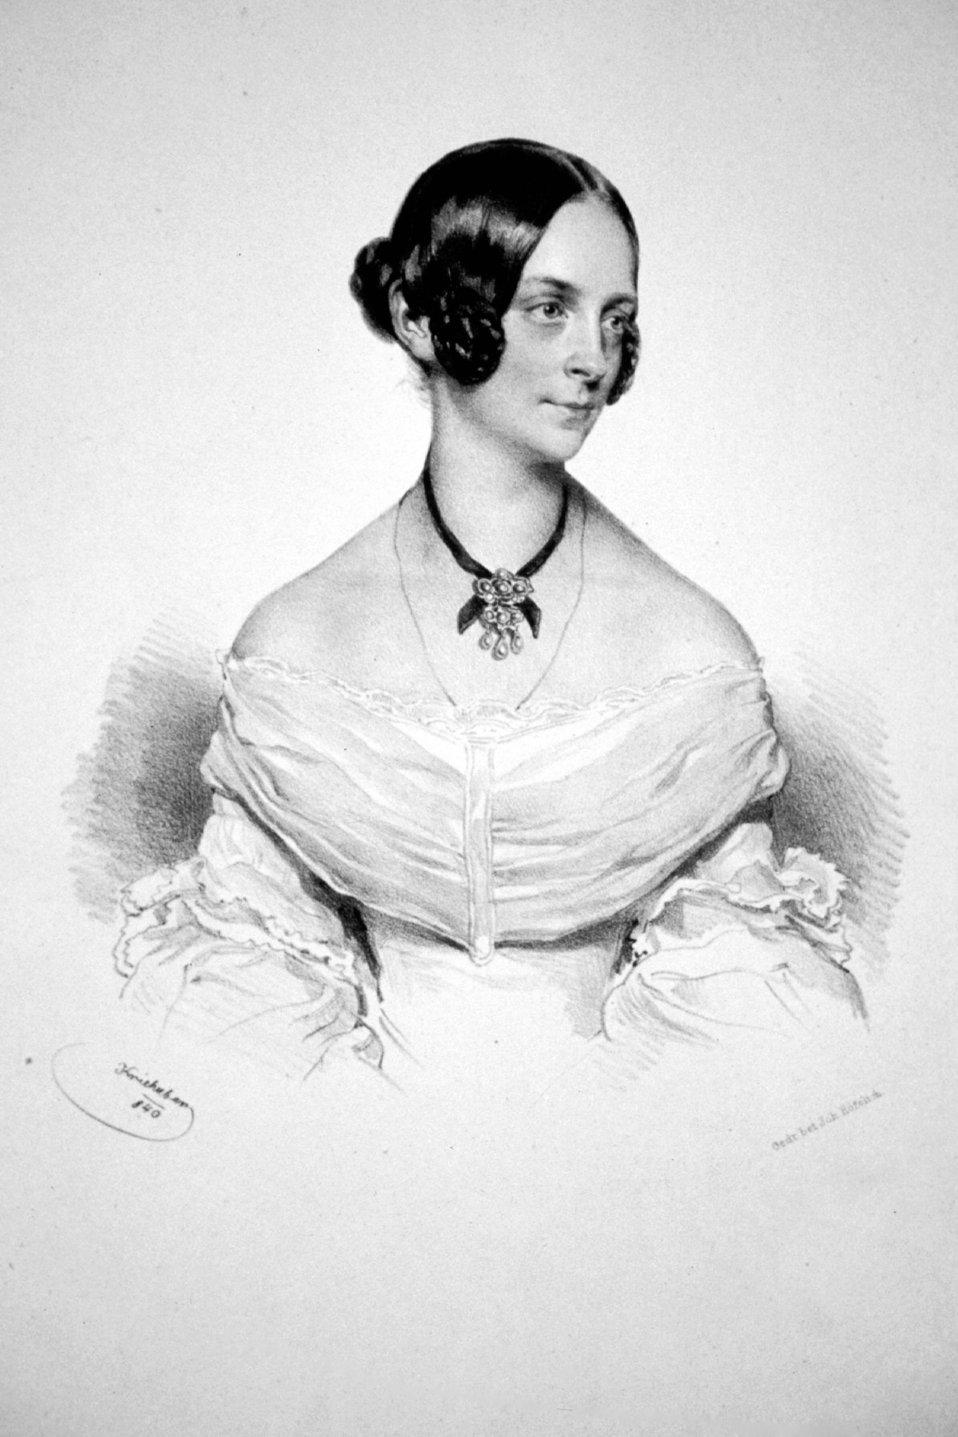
Anne Marie Gräfin Stadion Litho